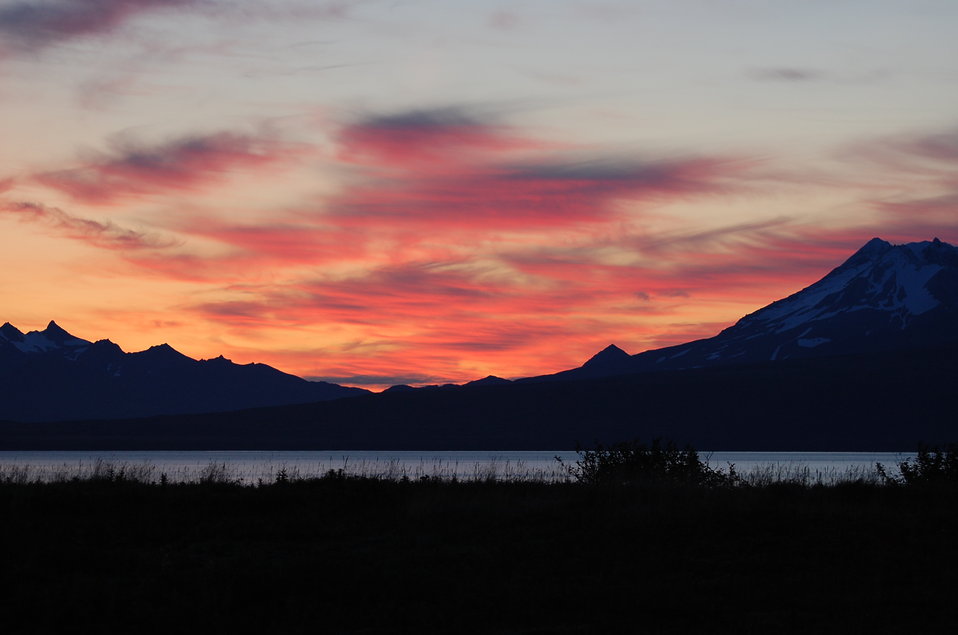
Sunrise at Izembek

Izembek National Wildlife Refuge